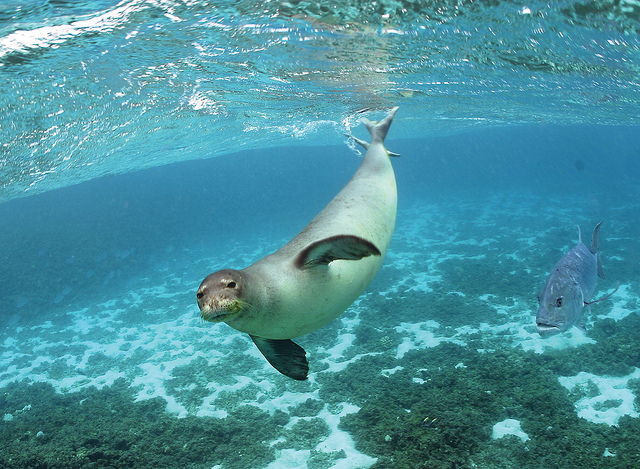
Monk Seal

Hawaiian and Pacific Islands National Wildllife Refuges
(Photo: James Watt, USFWS)

Conserving the Future - In July, 2011, thousands of Service employees, partners of the Service and wildlife enthusiasts gathered in Madison, WI for the 'Conserving the Future' conference that outlined a new, decade-long conservation plan for wildlife.